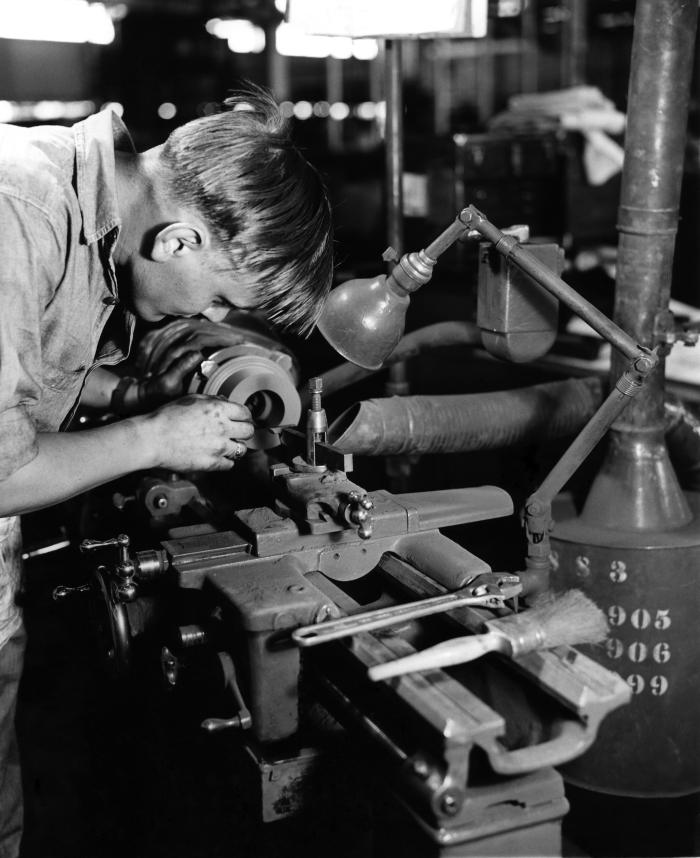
This 1946 historical photograph was provided by the Center for Disease Control's (CDC), National Institute for Occupational Safety and Health (NIOSH). The image depicted a young industrial plant worker while at a grinding machine inside a tungsten carbide (W2C) machine shop. Note that the worker was not wearing a face mask. Today's workers are warned to avoid inhalation of the very fine W2C dust; wear protective gloves to prevent skin contact; protect eyes from airborne dust contamination; avoid eating, drinking, or smoking while in the machine shop environment, which could lead to the ingestion of dust contaminants.